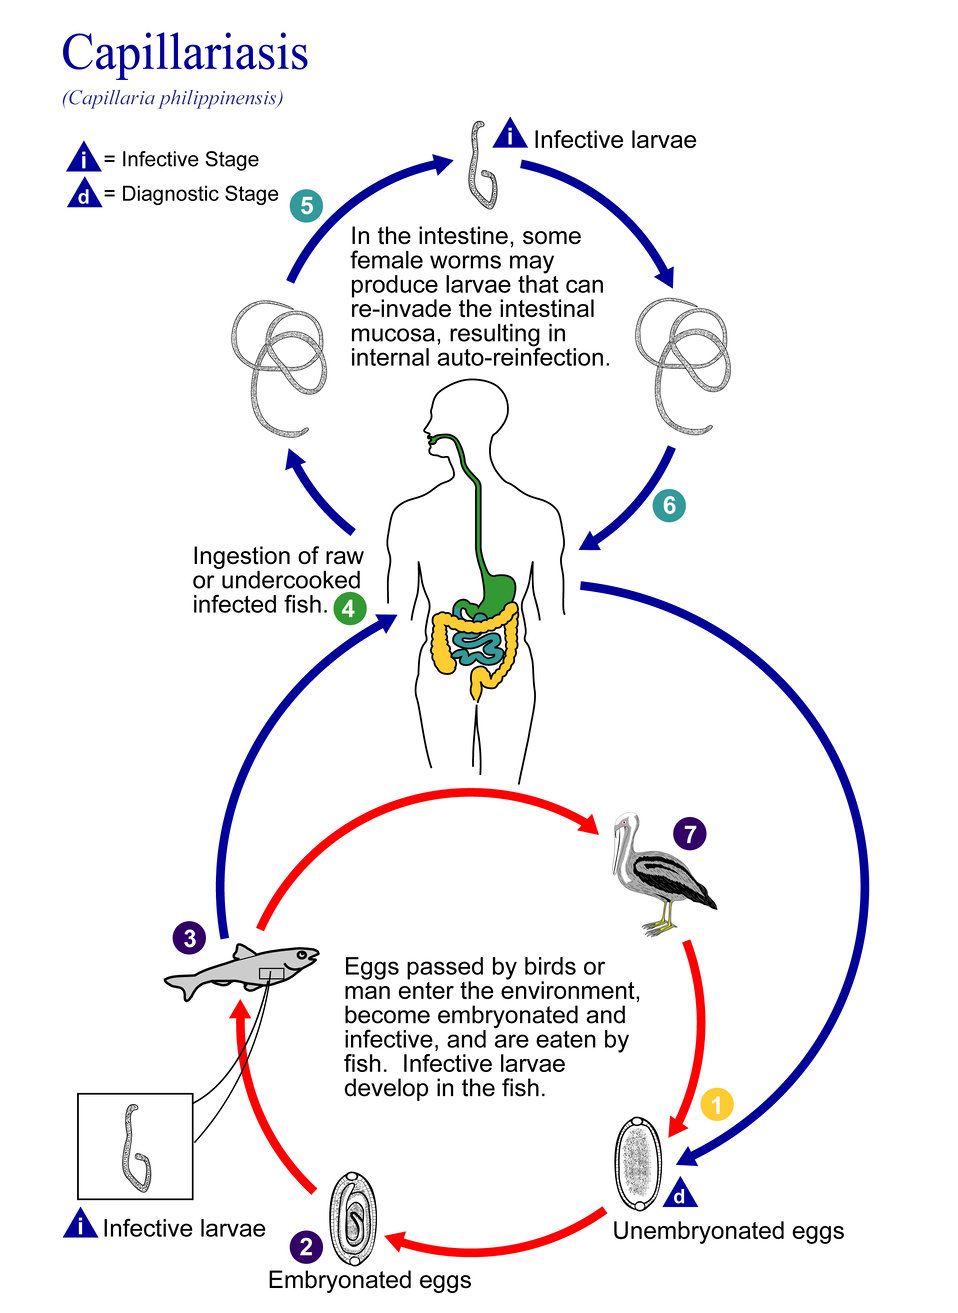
This illustration depicts the life cycle of Capillaria philippinensis, one of the causal agents of Capillariasis.